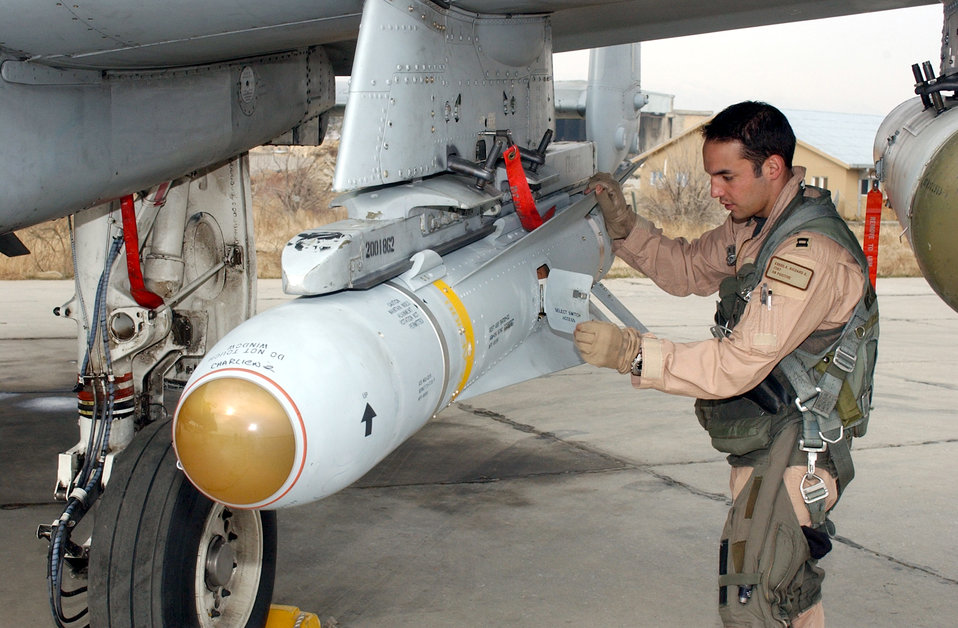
Getting ready for work

BAGRAM AIR BASE, Afghanistan -- Capt. Rich Erkkila inspects an AGM-65 G Maverick missile mounted on a wing pylon of his A-10 Thunderbolt II ground attack fighter before a combat patrol mission Jan. 7. Captain Erkkila is a pilot with the 354th Expeditionary Fighter Squadron and deployed from Davis-Monthan Air Force Base, Ariz.